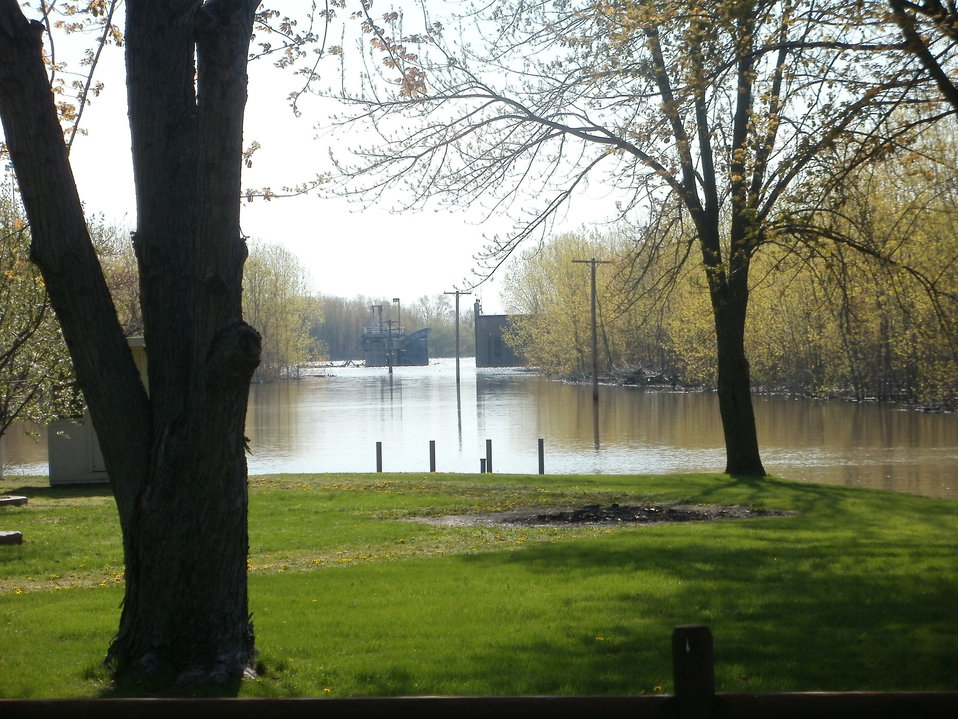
This is the LaGrange Lock and Dam on the Illinois River near Sections 28 and 32 of Cooperstown Township, Brown County, IL on Apr. 27, 2013. The lower story of the Lock House, which is located on the Brown County side of the Illinois River, is under water and only the top story is visible. The dam (not visible) extends east across the river to the Cass County riverbank. Barge traffic has been halted for the past several days to help prevent the wake from the barge traffic from causing additional damage to already strained levees. USDA photo Randy Tankersley.